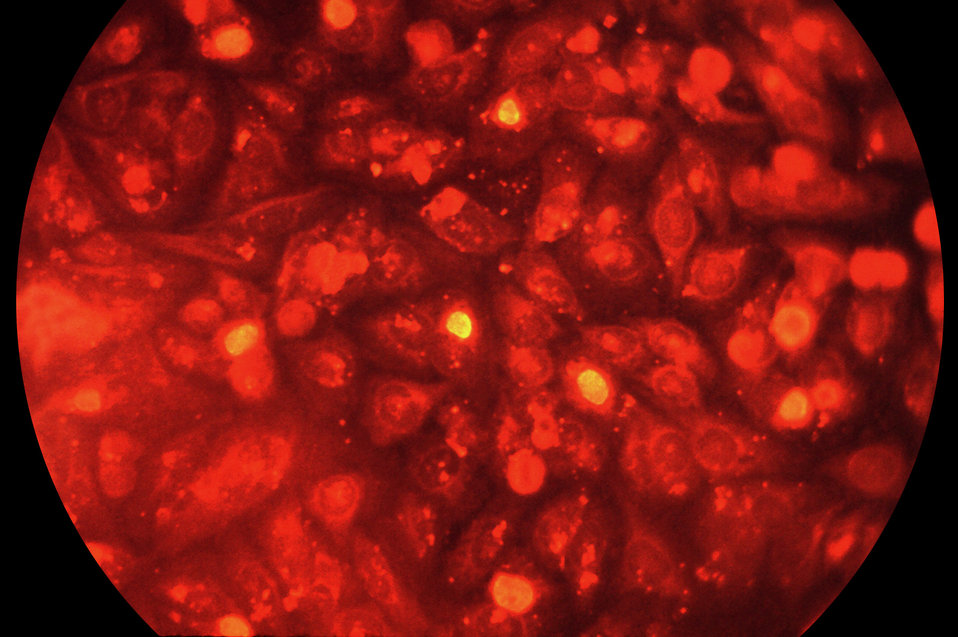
This photomicrograph depicts HeLa cells infected with Type-A Chlamydia trachomatis, Magnified 400X.